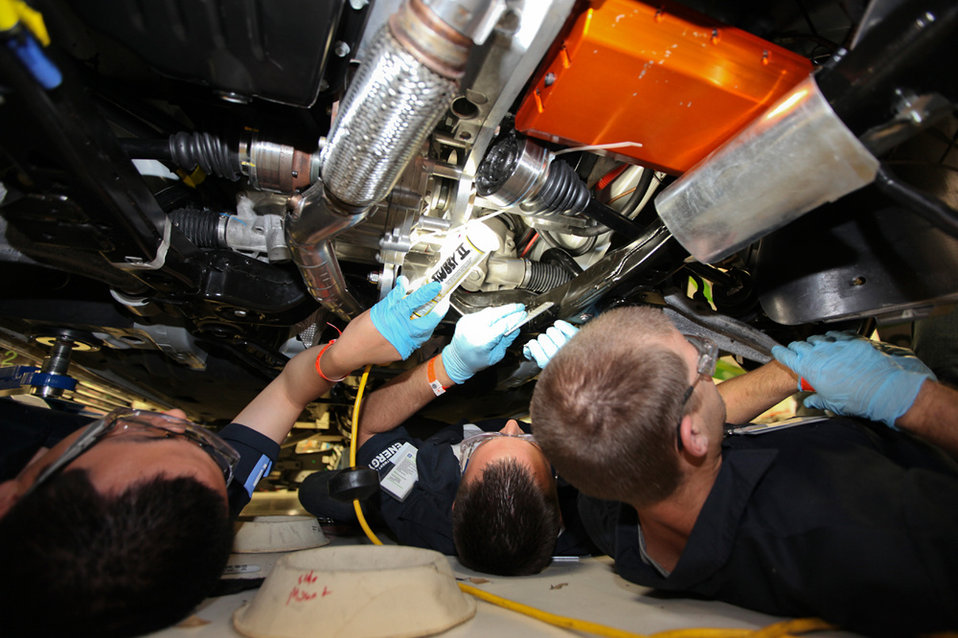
Over the span of 10 days, each team’s vehicle underwent engineering tests similar to those conducted by the automotive industry to determine a prototype's readiness for production and ultimately prove the viability of their advanced technology vehicles. Pictured here, members from the Embry Riddle Aeronautical University team work on their car. | Photo courtesy of EcoCAR 2.